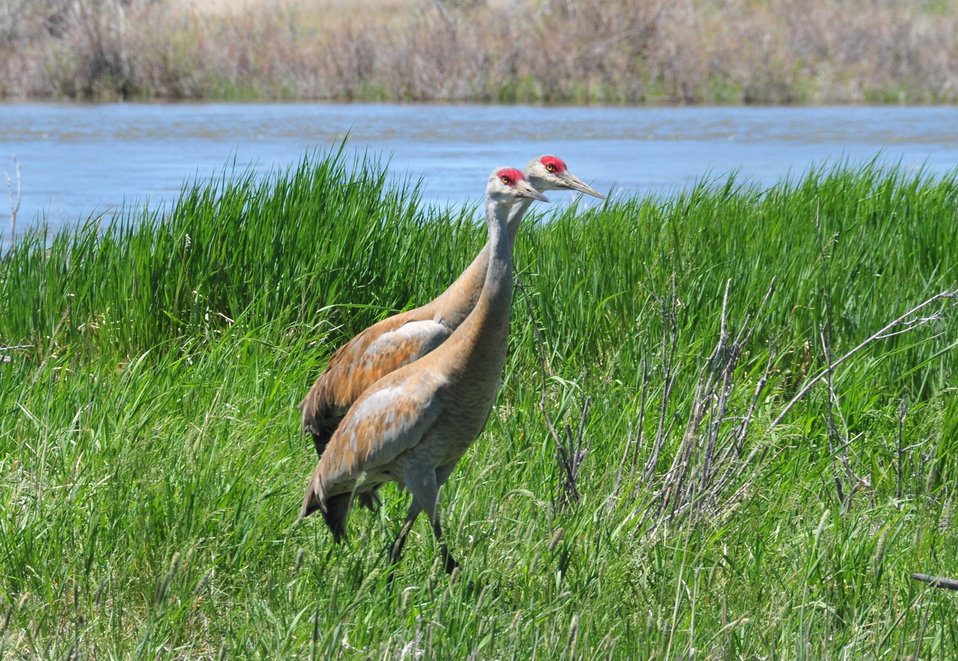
Greater Sandhill Crane Pair on Seedskadee National Wildlife Refuge

A pair of greater sandhill cranes lead their 2 colts (following behind them) on one of their first foraging forays.